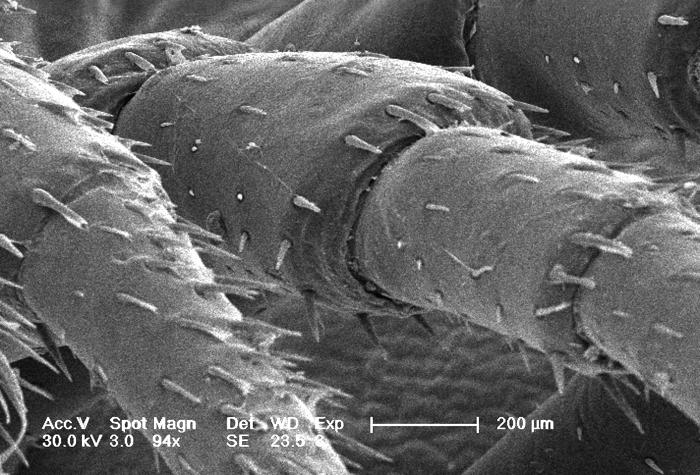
This scanning electron micrograph (SEM) depicted a greatly magnified infero-oblique view of the trunk region leg segments of an unidentified millipede found outside on the ground in the Decatur, Georgia suburbs; Magnified 94x. With their 'jointed legs', millipedes are members of the insect Phylum Arthropoda, and the Class Diplopoda. Each of the millipede's body segments is actually composed of two fused segments, and is know as a diplosegment, each of which possesses two pairs of legs.